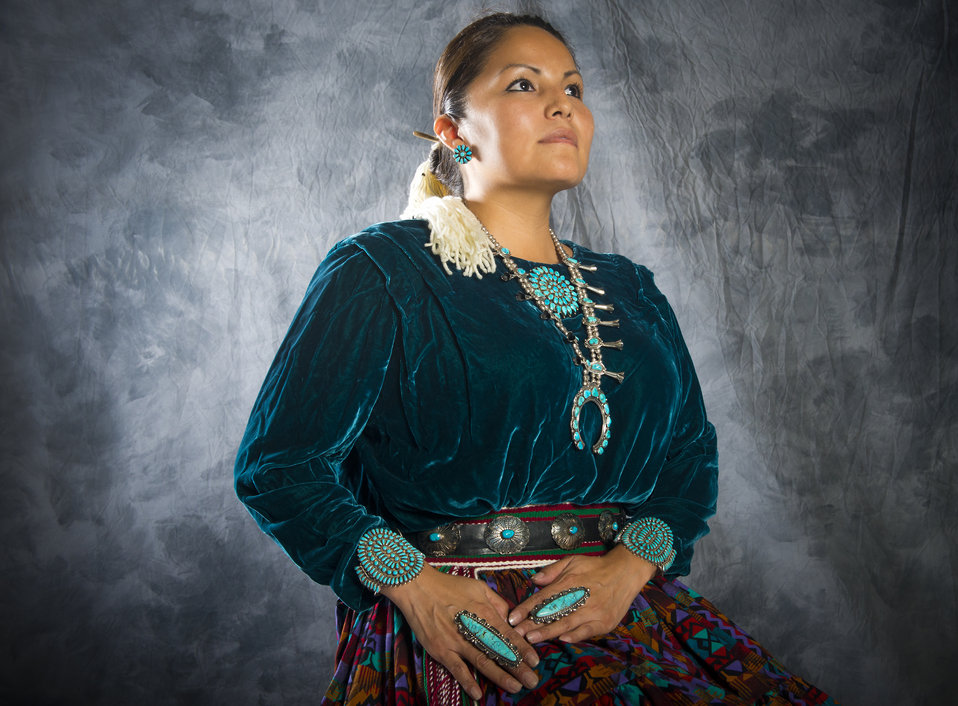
Proud Heritage

Tech. Sgt. April Cooper, 23d Wing command section superintendent, poses wearing her traditional Navajo dress at Moody Air Force Base, Ga., Nov. 27, 2012. November is Native American Heritage Month, which honors and celebrates the many contributions Native Americans have made and continue to make to the U.S.